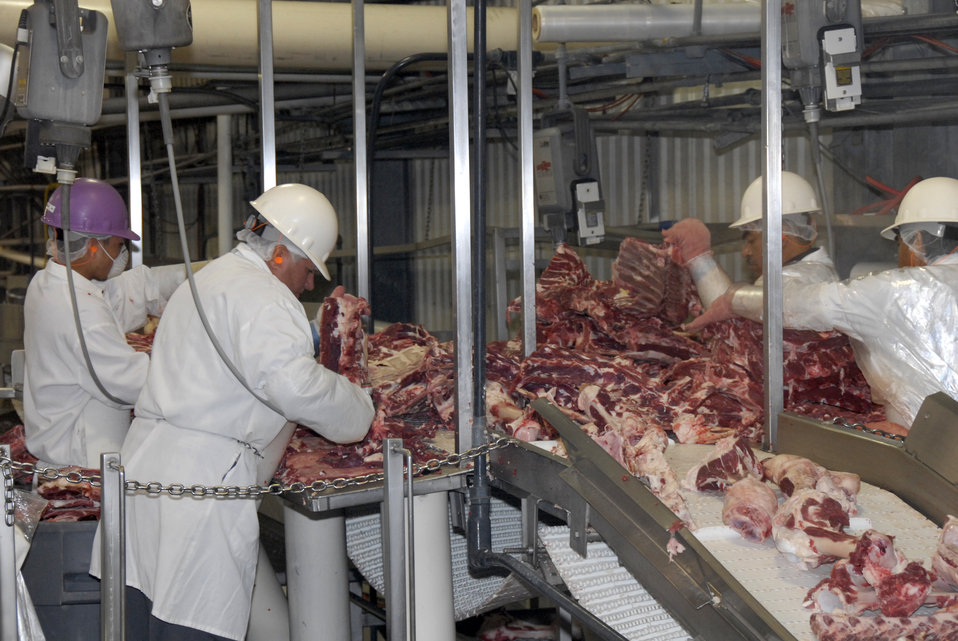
Workers at the Sam Kane beef slaughterhouse in Corpus Christi, Texas on June 10, 2008 dissect, sort and separate beef parts. U.S. Department of Agriculture (USDA) Food Safety and Inspection Service (FSIS) inspectors are on site to ensure the beef is processed in accordance with USDA FSIS regulations.